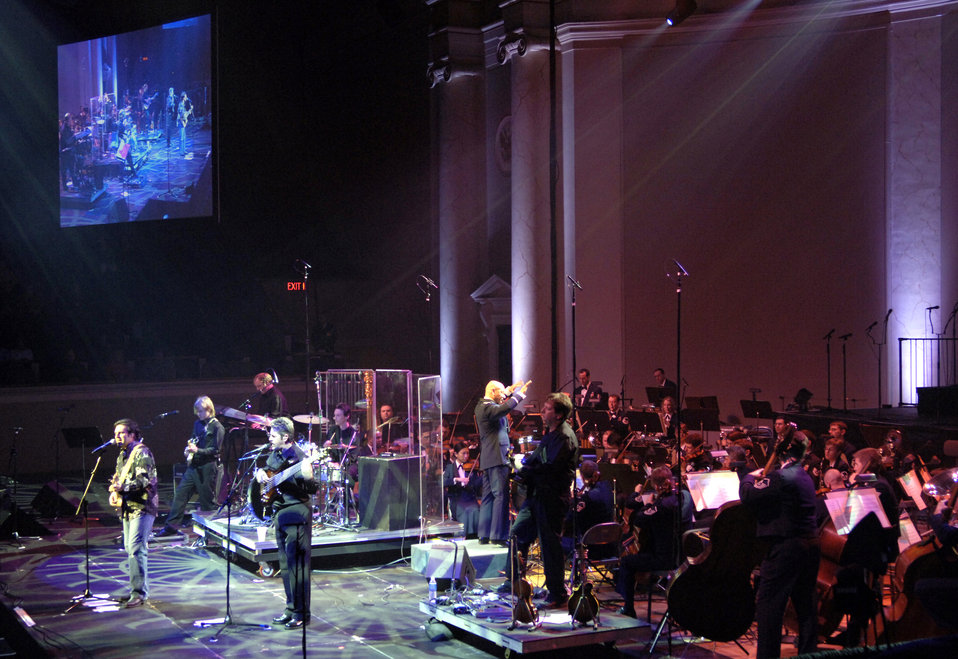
USAF Band guest artist series

Country music star Mark Wills performs with members of the US Air Force Band capping off its 40th anniversary season of their guest artist series, Sunday, Mar. 5, 2006, in Washington, D.C. Also performing at the concert were members of the Air Force Reserve Pipe Band from Robins Air Force Base, Ga.